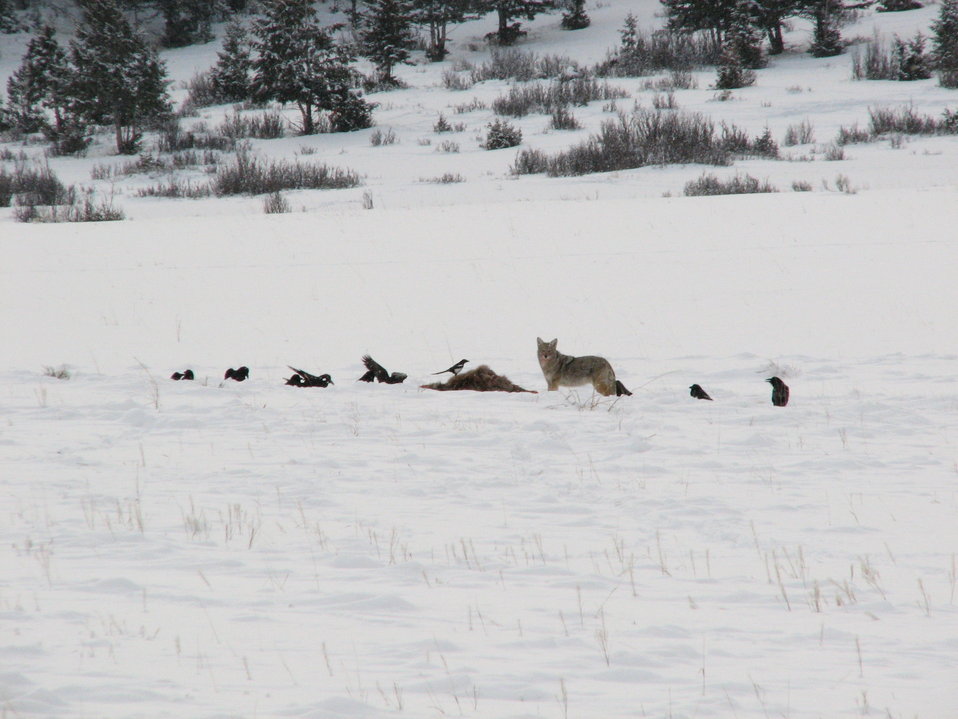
Sharing a Lunch

A coyote, along magpies and ravens, scavenges on an elk carcass.